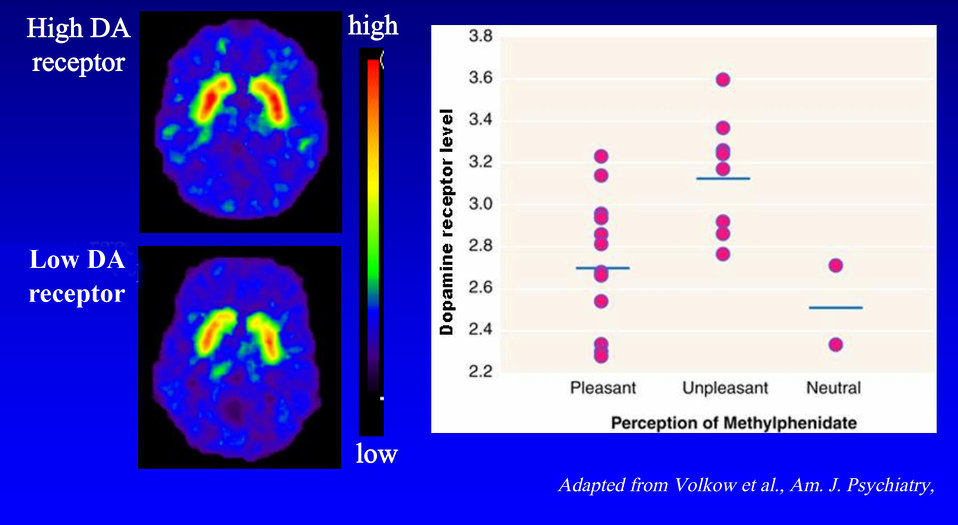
Receptor Variation

Individual differences in response to drugs: DA receptors influence drug liking.